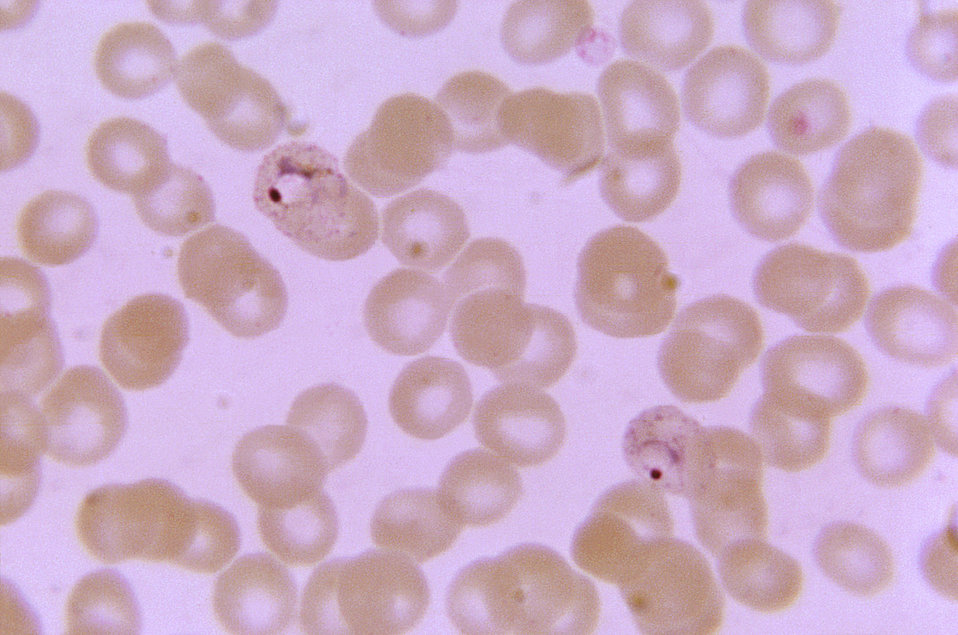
Magnified 1125X, this thin film blood smear micrograph depicts two ring-form Plasmodium vivax trophozoites, each displaying a stippled cytoplasm.